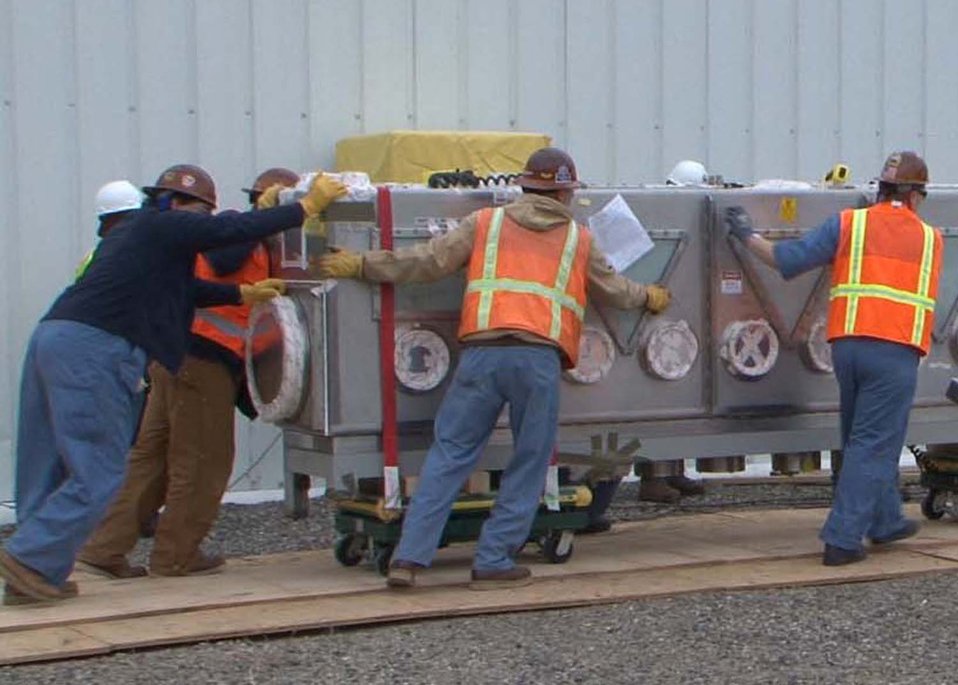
Glove boxes at the Hanford site